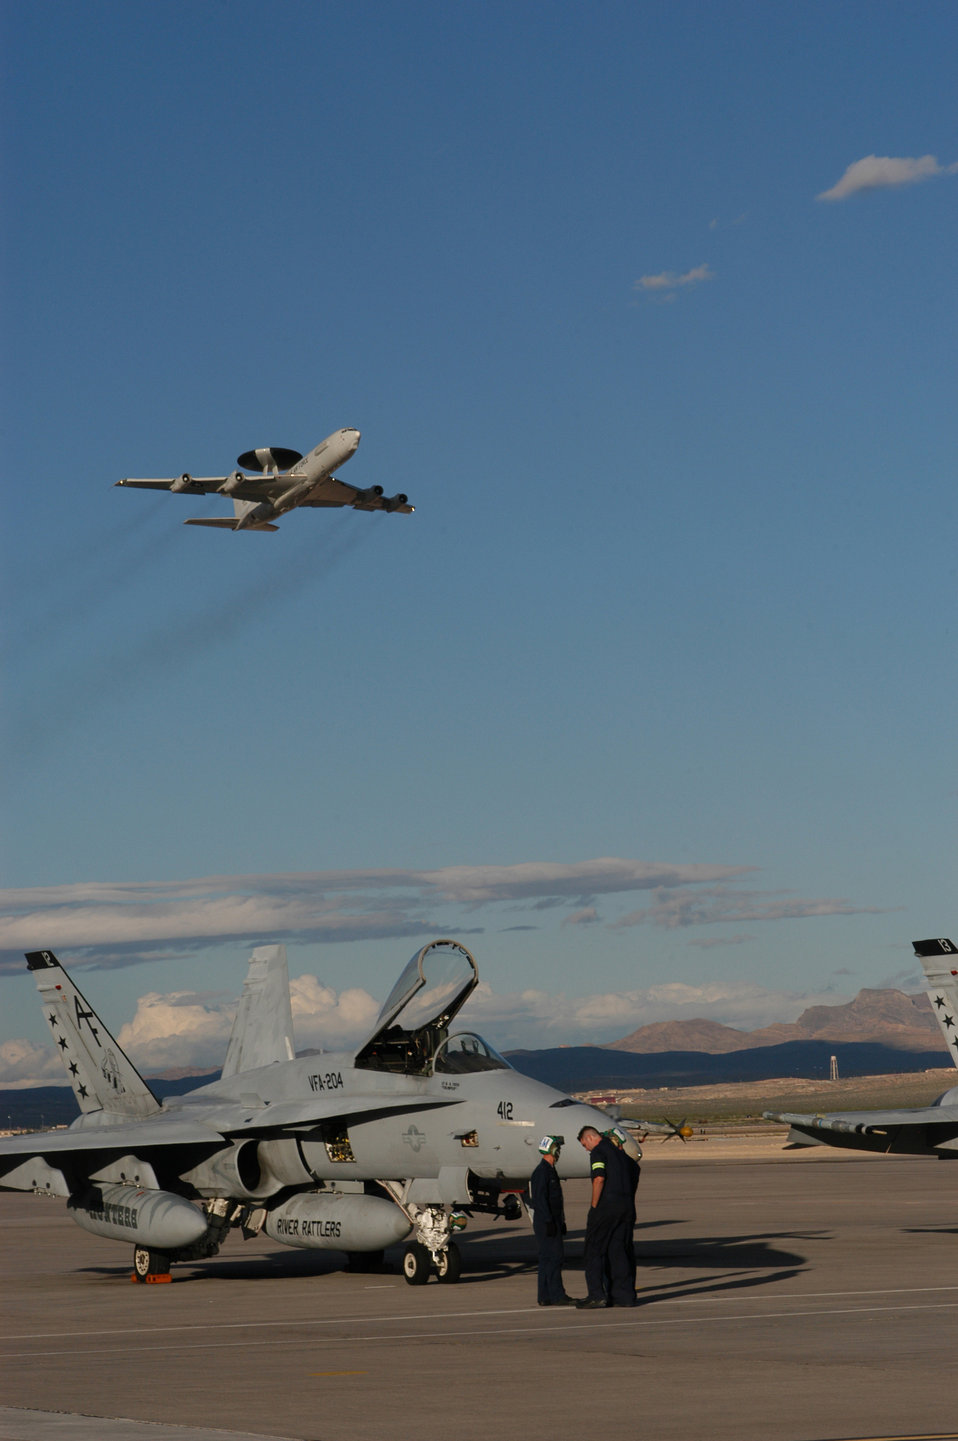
Flying the flag

NELLIS AIR FORCE BASE, Nev. -- An E-3 Sentry Airborne Warning and Control System takes off while a Navy F-18 crew prepares for a mission here during Joint Red Flag 2005. About 10,000 U.S. and coalition forces are participating in the exercise, which runs through April 2. The Sentry is from the 513th Air Control Group at Tinker Air Force Base, Okla.